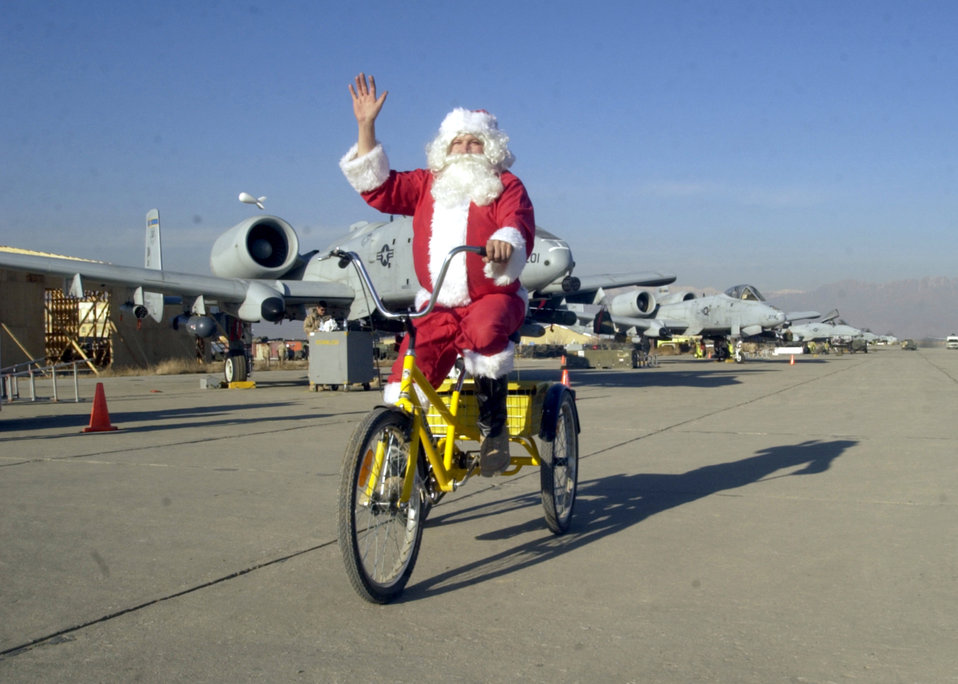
A visit from Santa

BAGRAM AIR BASE, Afghanistan -- Santa Claus takes a bike ride down the flightline here Dec. 24. The festive old elf spread holiday cheer to airmen deployed here supporting Operation Enduring Freedom.